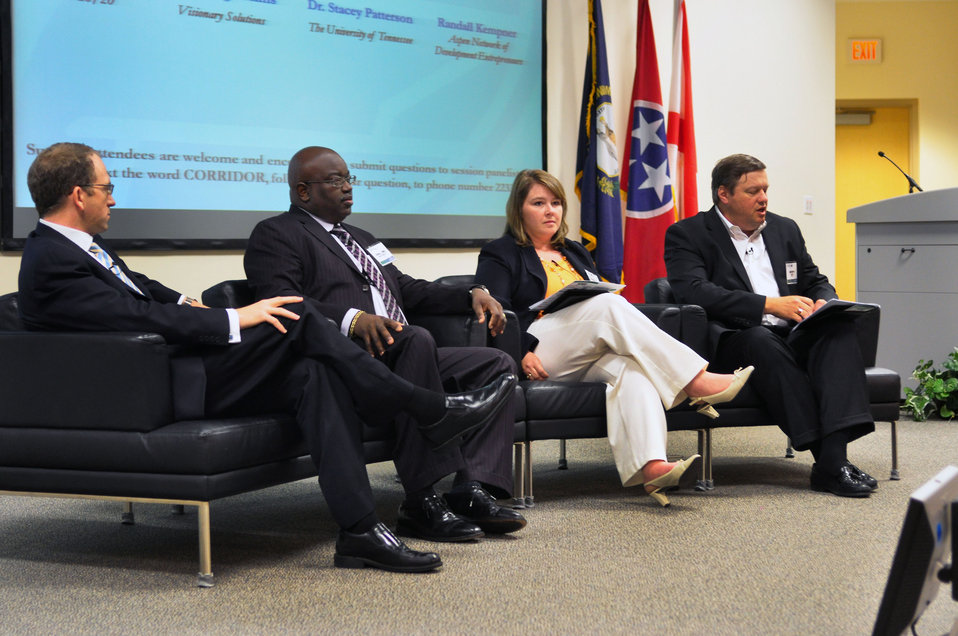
Tennessee Valley Corridor 2013 Oak Ridge

13-062 DOE photo Lynn Freeny 5-29-2013 L to R Dr. Stacey Patterson UT, Cavanaugh Mims Visionary Solutions, Lisa Williams Soldier 1 Corp. and John Morris Tech 20/20 Oak Ridge Tennessee